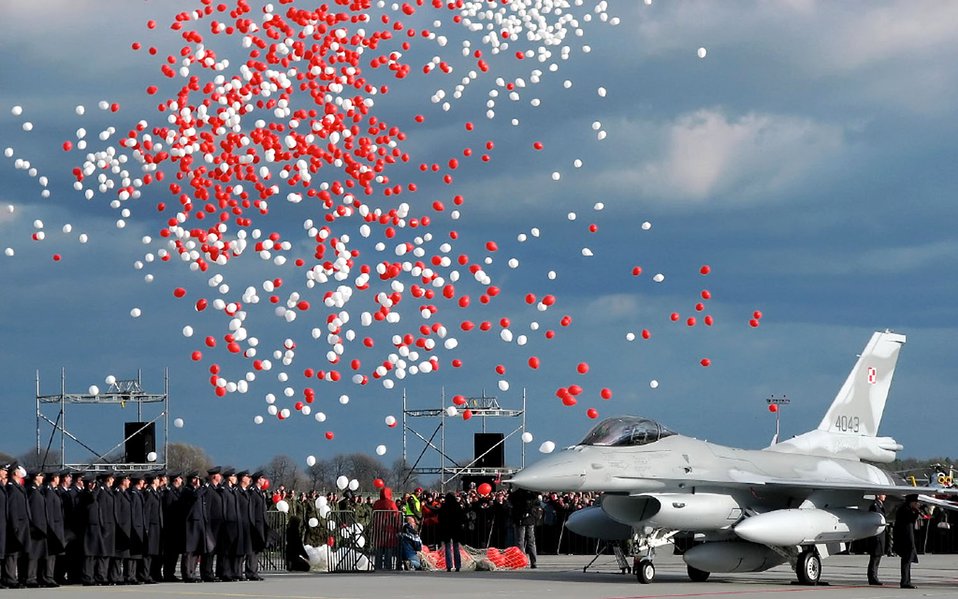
Poland receives first F-16s

Polish air force officials welcome the first of 48 F-16 Fighting Falcons Nov. 9 during an arrival ceremony at the 31st Air Base at Poznan, Poland. Gen. Tom Hobbins, representing the U.S. Air Force chief of staff, attended the ceremony that marked Poland's transformation from Soviet-style equipment to some of the most modern systems in Europe and NATO.